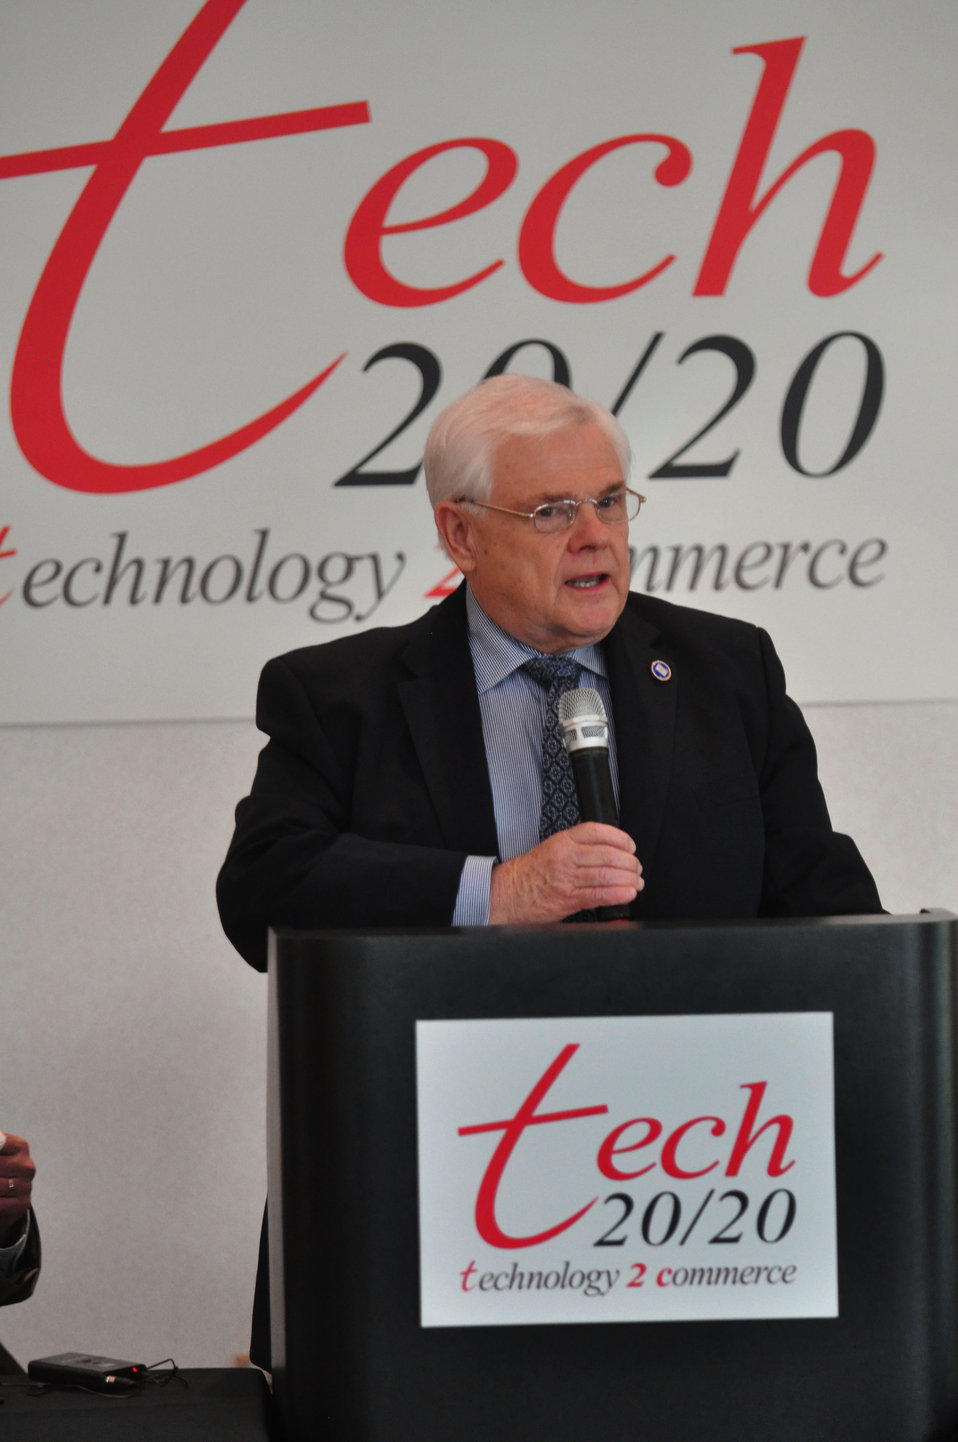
Tennessee Valley Corridor Summit Oak Ridge

13-062 DOE photo Lynn Freeny 5-29-2013 Oak Ridge Tennessee